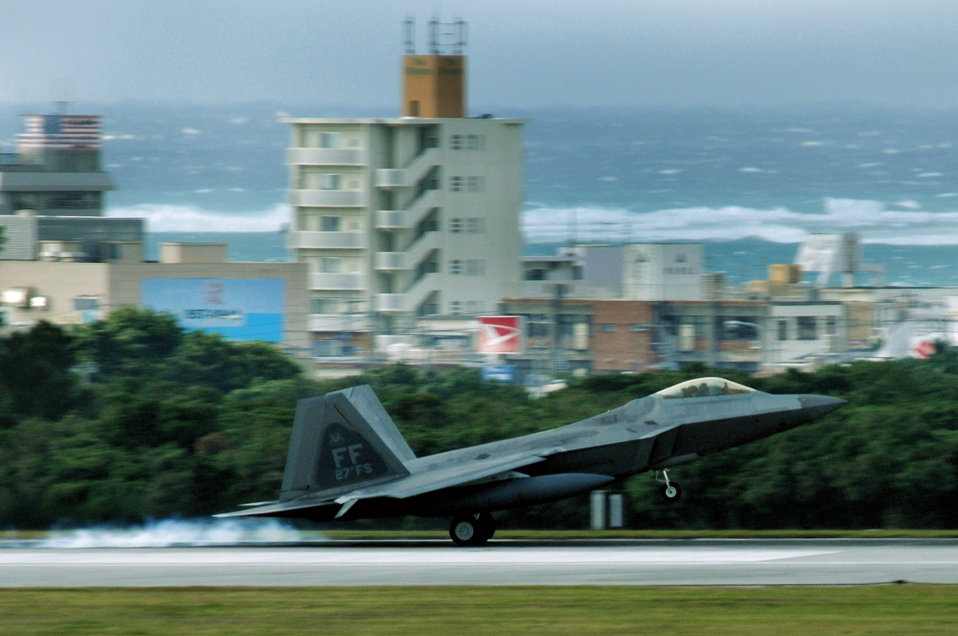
Raptors return to the Pacific

An F-22 Raptor lands at Kadena Air Base, Japan, Jan. 10. The aircraft is one of 12 deployed from Langley Air Force Base, Va., as part of an air expeditionary force rotation.